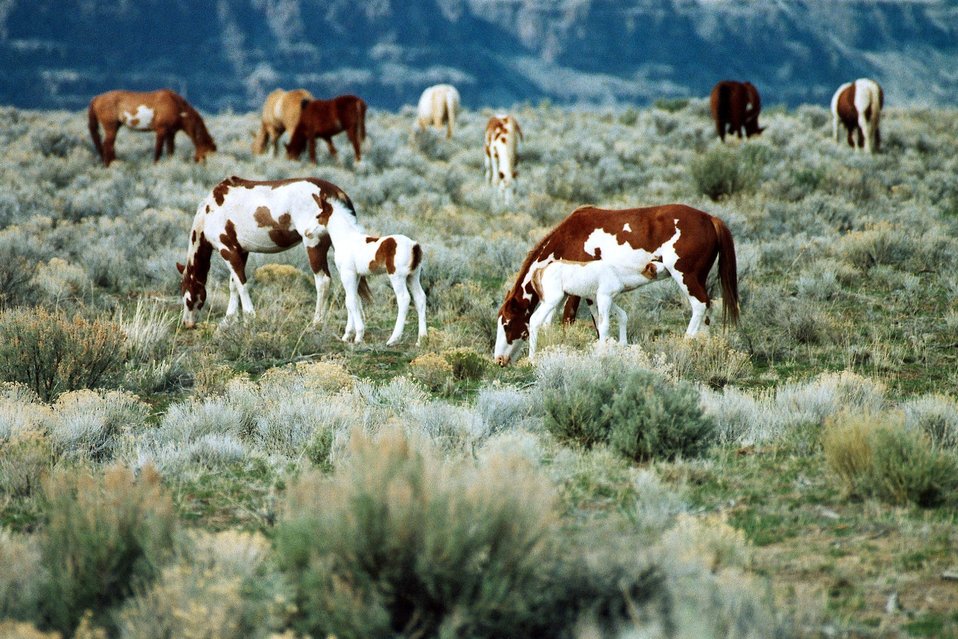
Medium shot of grazing mares and two foals.